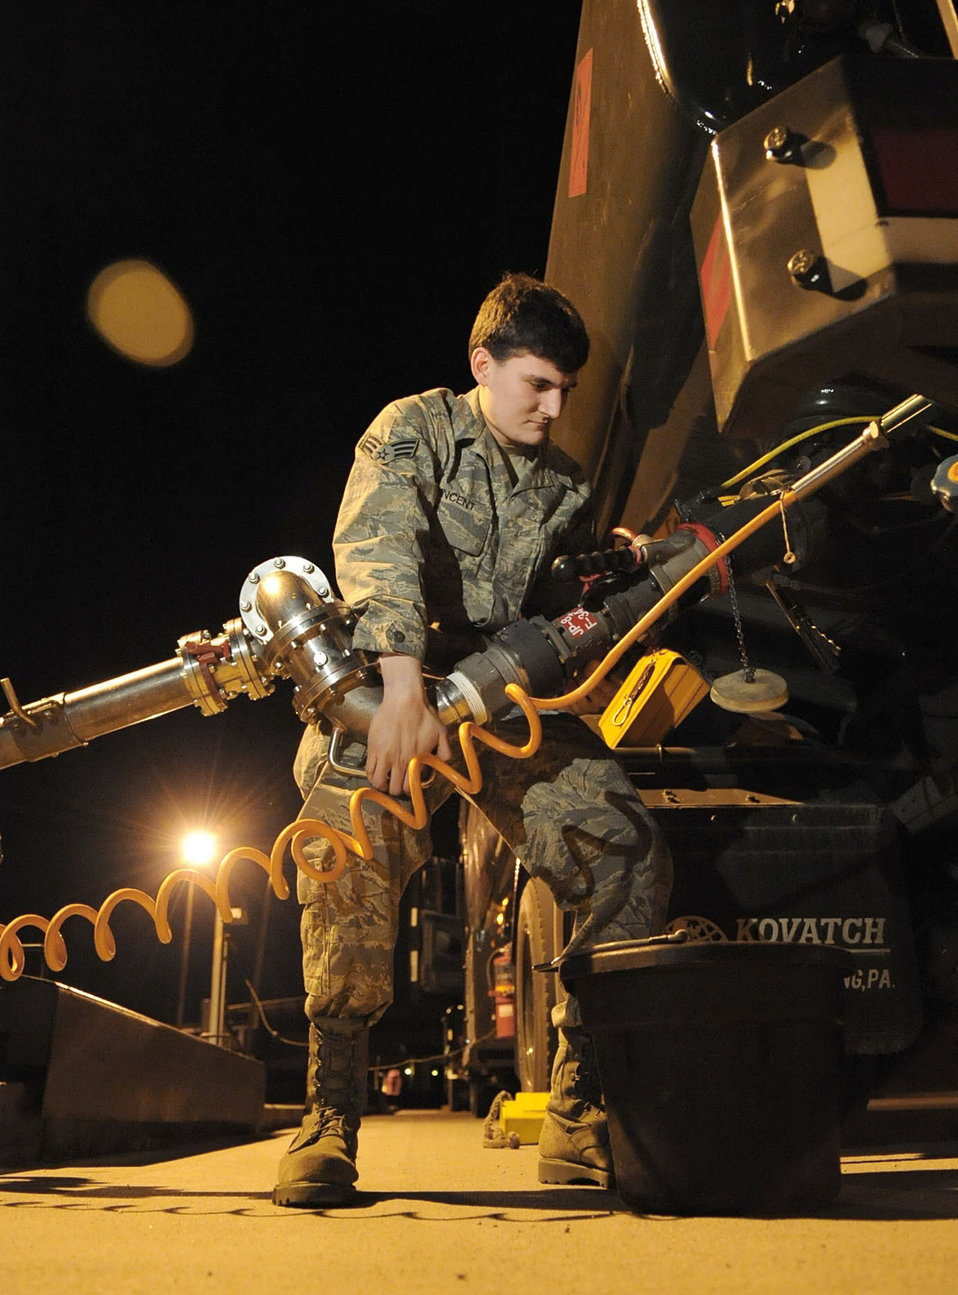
Refueling trucks

Senior Airman John Vincent refuels a refueling truck in preparation for incoming aircraft March 23, 2011, at Aviano Air Base, Italy, in support of Operation Odyssey Dawn. Vincent is a fuels specialist with the 31st Logistics Readiness Squadron.